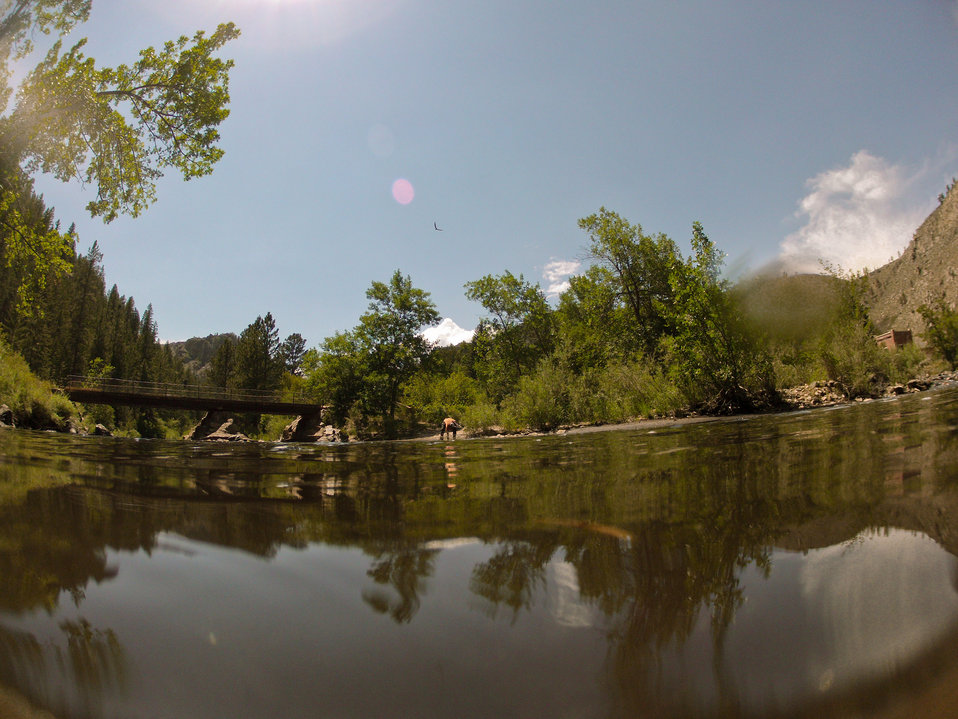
U.S. Department of Agriculture District Conservationist Todd Boldt digs down into the riverbanks and finds ash 18 inches below the surface, at the water’s edge; a result of the Hewlett Gulch Fire (May 14, 2012), in the Poudre Canyon area, near Fort Collins, Colorado on Friday; July 20; 2012. Unmitigated runoff has turned the water in this river from clear to nearly black heavily laden with ash, silt, and burnt debris that recent thunderstorms have washed down from the mountainsides. At its peak more than 400 firefighters were battling fires pushed by 50 mph winds. When the last embers were cooled, more than 12-square miles lay blackened at a cost of approximately 3.2 million dollars to fight. The aerial distribution of straw has successfully kept nearby Seaman Reservoir clean for the drinking water of the City of Greeley. Forest Service lands receive straw; while private and other lands receive a seed mix and straw to promote ground cover plant growth on ash-covered lands. In total; 1; 800 tons of straw will be applied during the 14-day operation. One quarter of the cost was paid by the City of Greeley and the U.S. Department of Agriculture funded the remainder.